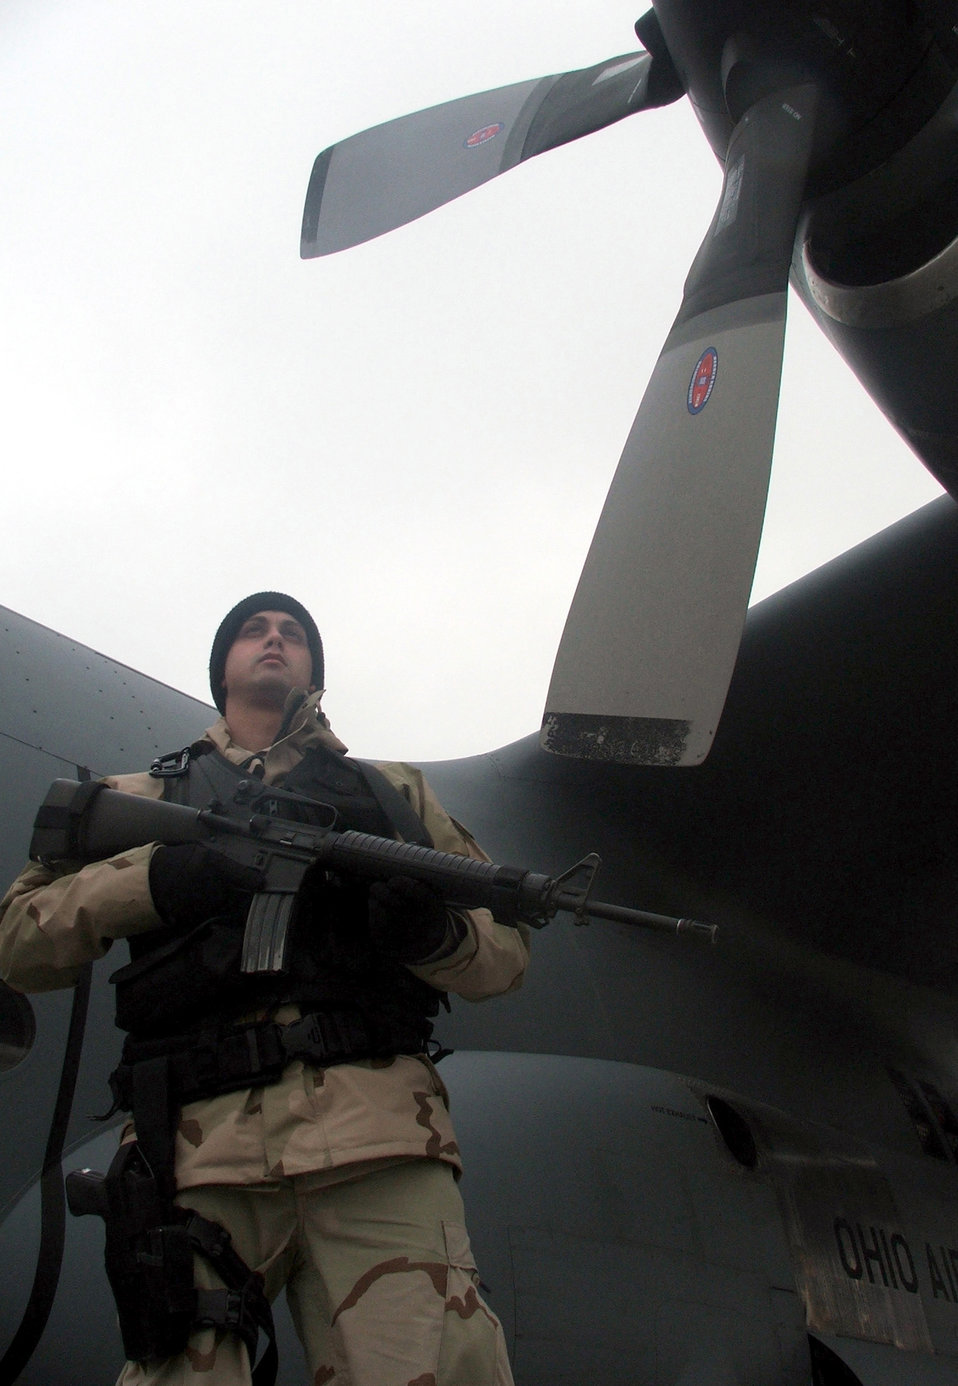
Guarding Hercules

KARSHI-KHANABAD AIR BASE, Uzbekistan -- Senior Airman Mark Ide, 416th Expeditionary Mission Support Squadron security forces flight deployed here from Hanscom Air Force Base, Mass., stands in front of a C-130 Hercules here before it leaves for a security forces fly-away mission to a forward-deployed location in Afghanistan on Feb. 10.